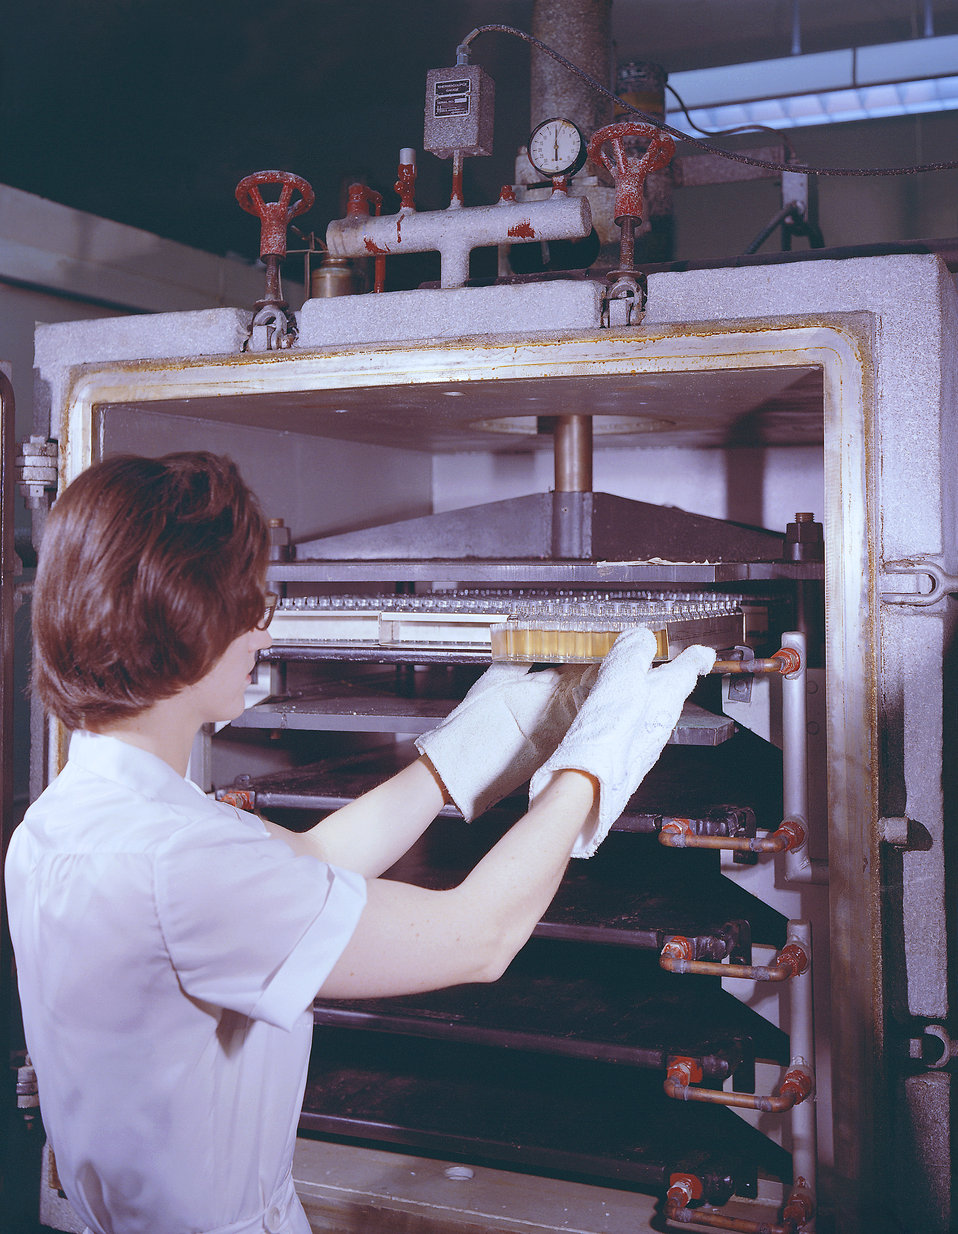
This historic 1963 photograph depicted laboratorian, Deanne Tolson, as she was preparing vials containing an unknown reagent, for lyophilization, otherwise known as freeze-drying, prior to their shipment. Lyophilization prolongs the lifespan of perishable materials, so that they may be shipped, and stored for a much longer time, often without the need for refrigeration.